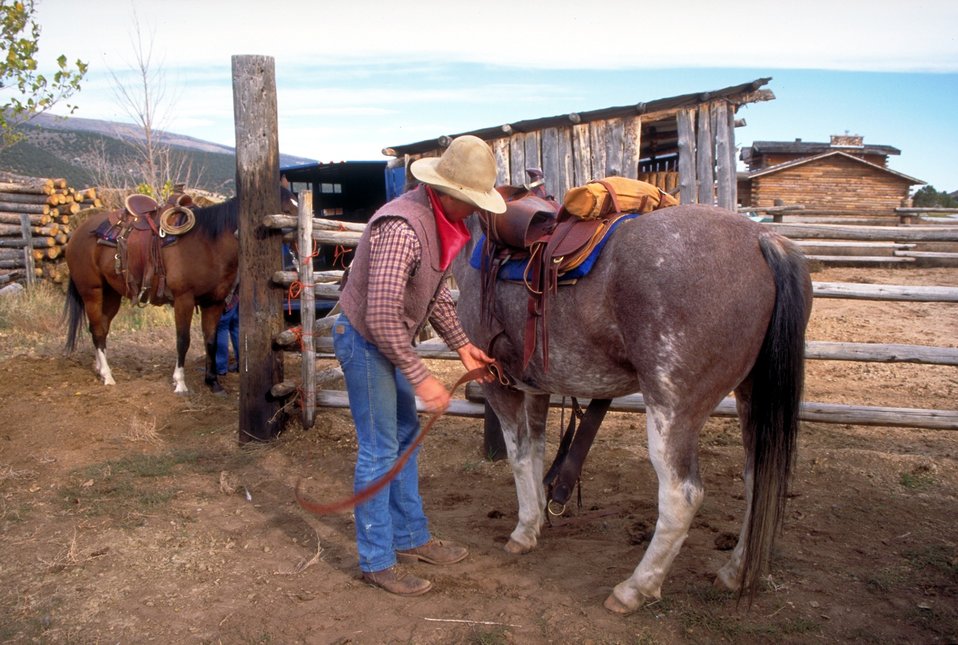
Working cowboys living near Vernal, Utah.